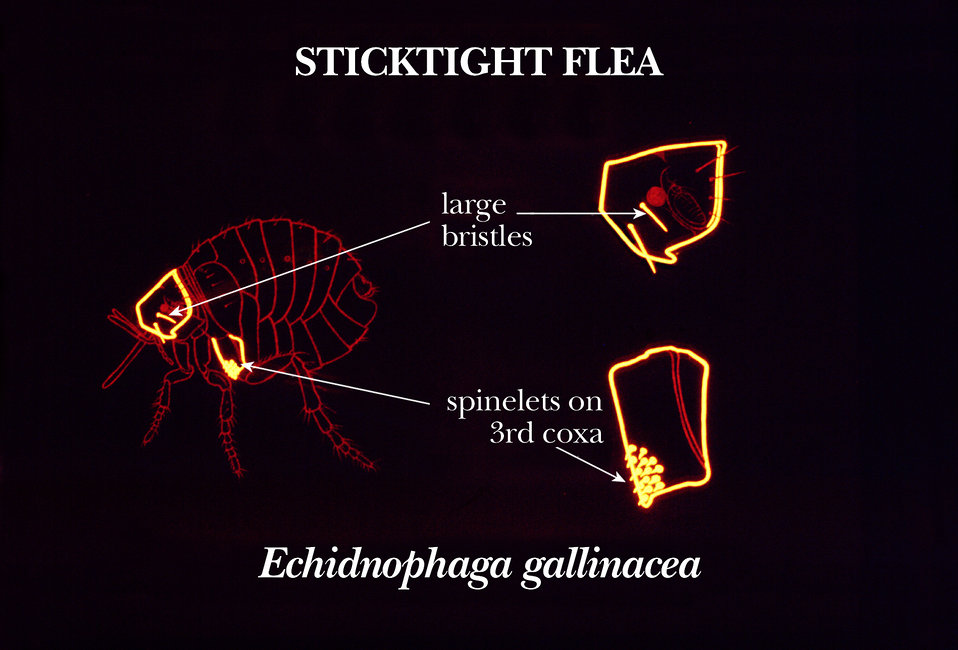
This drawing reveals two of the identifying morphologic characteristics of the sticktight flea, Echidnophaga gallinacean.